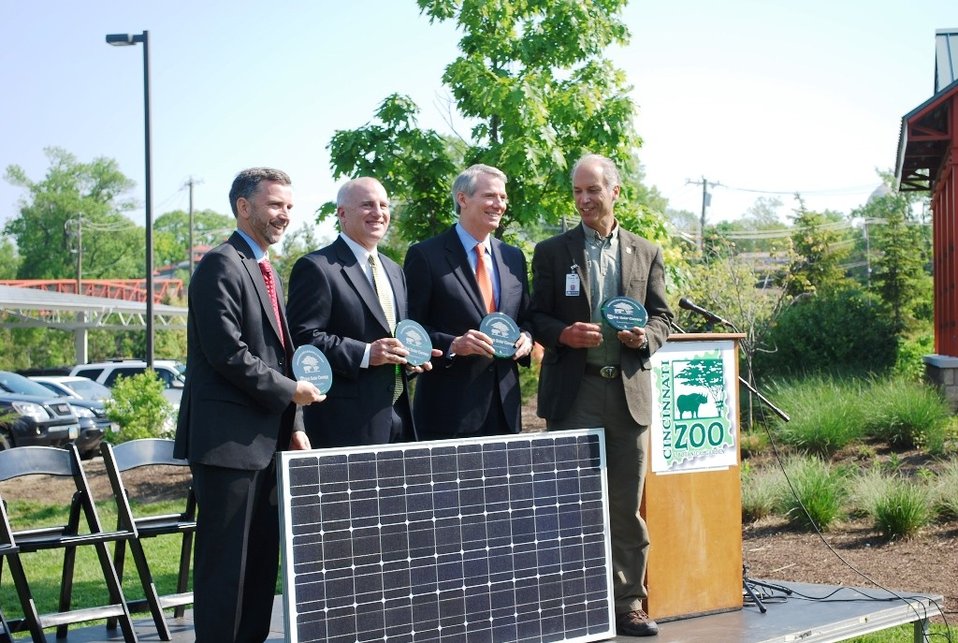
Assistant Secretary Tangherlini at the Cincinnati Zoo

On May 9, 2011, Assistant Secretary Dan Tangherlini traveled to Cincinnati, Ohio to help dedicate the nation’s largest publicly accessible urban solar array. The 6,400 solar panels provide shaded parking for the Cincinnati Zoo’s visitors and will produce about 20 percent of the Zoo’s annual energy needs. And on sunny, cool days, they actually send power back to the grid. This project exemplifies the true meaning of a public-private partnership. It was a combination of private investment supported by public financing in the form of New Markets Tax Credits and Treasury’s Section 1603 Program, which provides payments in lieu of renewable energy tax credits, that made this project possible.